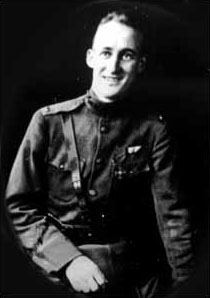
Lt. Stephen W. Thompson was the first American in uniform to shoot down an enemy airplane.